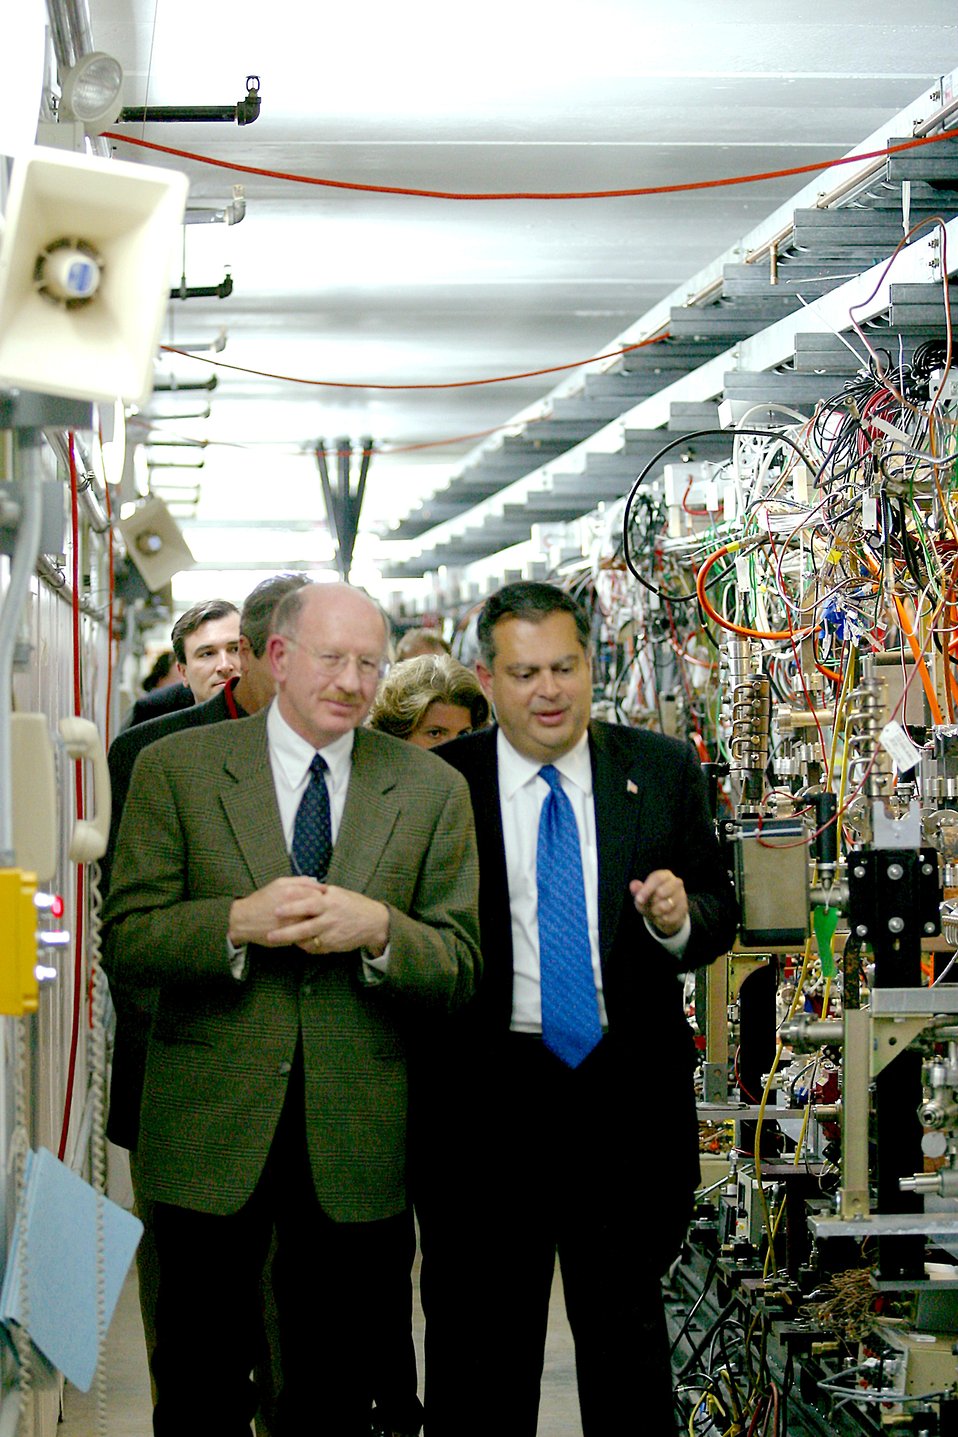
SECRETARY ABRAHAM AT BABAR CONTROL ROOM AT SLAC ON NOVEMBER 25, 2002.

SECRETARY ABRAHAM TOURED THE FACILITIES AT THE STANFORD LINEAR ACCELERATOR CENTER, INCLUDING THE BABAR DETECTOR, SLAC'S MAJOR HIGH-ENERGY PHYSICS PROGRAM WHICH WILL ENABLE SCIENTISTS TO INVESTIGATE THE MATTER-ANTIMATTER ASYMMETRY IN NATURE.